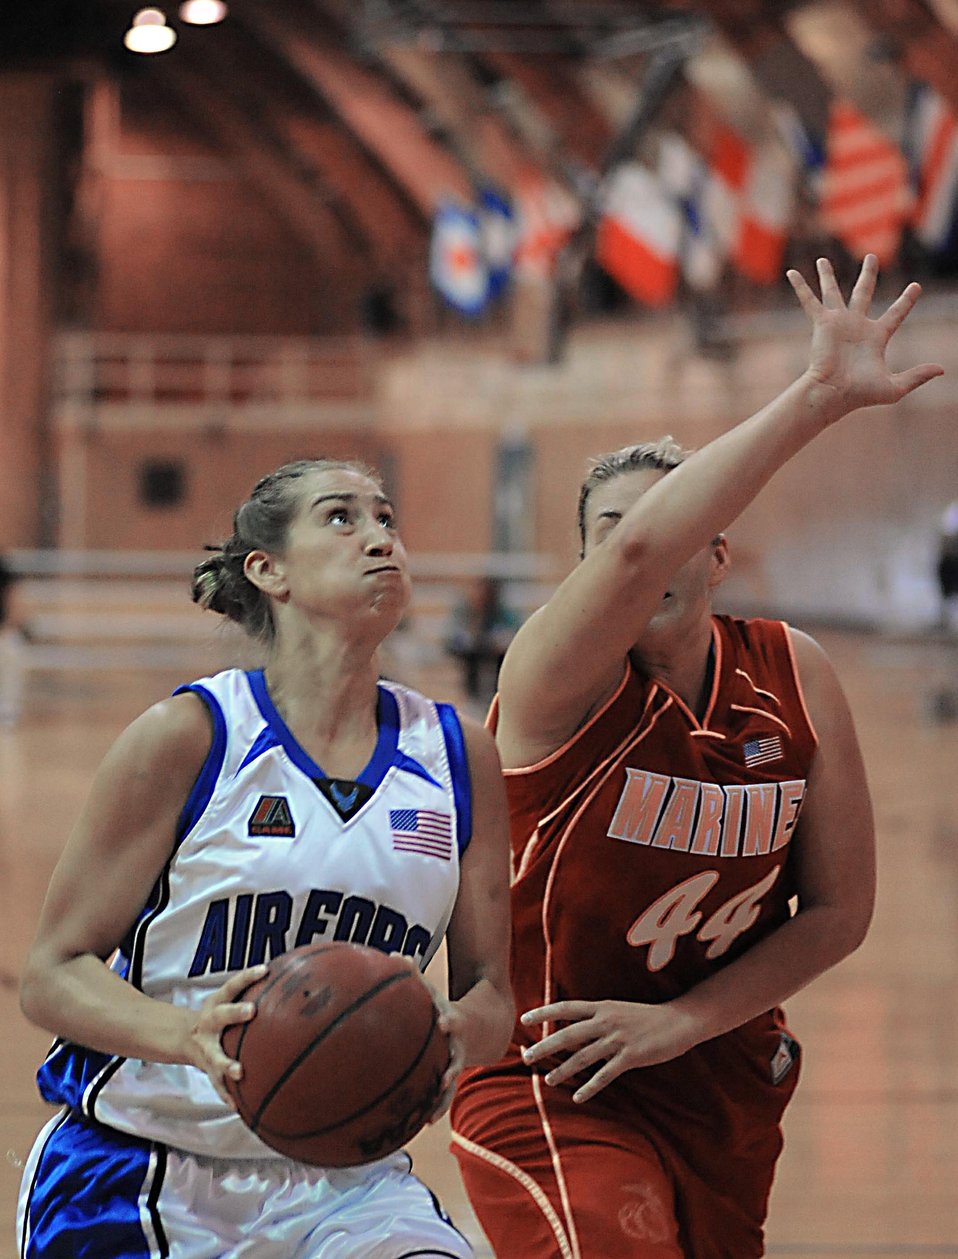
Armed Forces Basketball Championship

Senior Airman Jennifer McClure takes the ball to the basket for two points during a basketball game against the Marine Corps during the Armed Forces Basketball Championship. The Air Force women won the game. The tournament ran from May 12 to 17 at the Naval Support Activity Mid-South in Millington, Tenn.